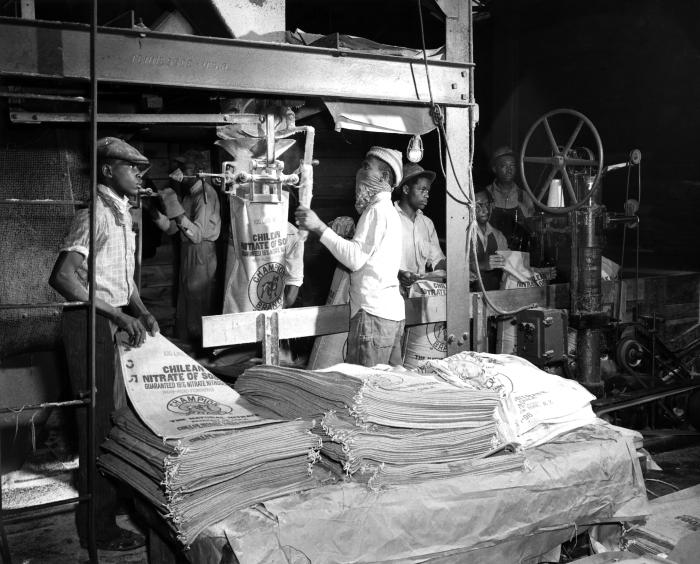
This April 1941 historical photograph was provided by the Center for Disease Control's (CDC), National Institute for Occupational Safety and Health (NIOSH). It depicted a number of African-American workers loading nitrate of soda into cotton bags. Note that the men were equipped with inadequate respiratory protection. One worker in the background was wearing a simple dust mask. The worker in the center was using a bandana as protection, while the others were completely unprotected. In the 1940s and 1950s, the Industrial Hygiene Division (IHD) investigated hazards associated with activities such as metal grinding. The potential worker health problems associated with nitrate of soda dust include both inhalational respiratory pathology, and dermatitic, or skin irritation upon contact. Prolonged exposure may cause anemia, weakness, general depression, headache, mental impairment, methemoglobinemia, and nephritis.